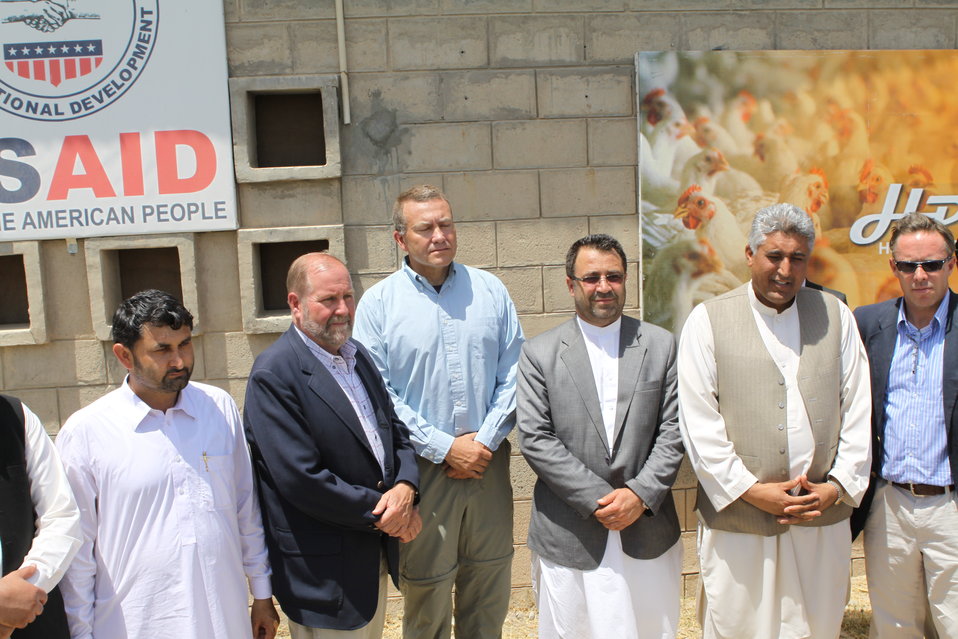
Bolan Poultry Farm